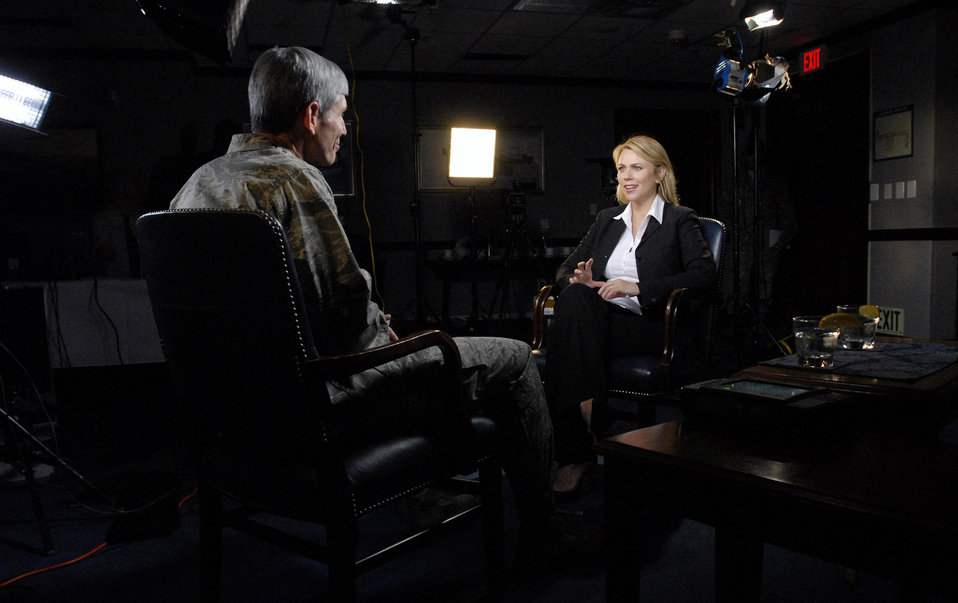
General Schwartz on '60 Minutes'

Air Force Chief of Staff Gen. Norton Schwartz answers questions during an interview April 15 with Lara Logan from